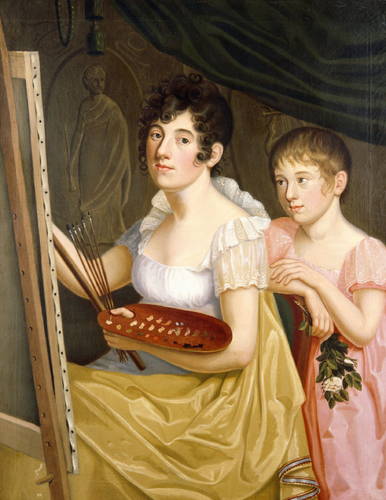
Caroline Bardua - Johanna & Adele Schopenhauer (1806)